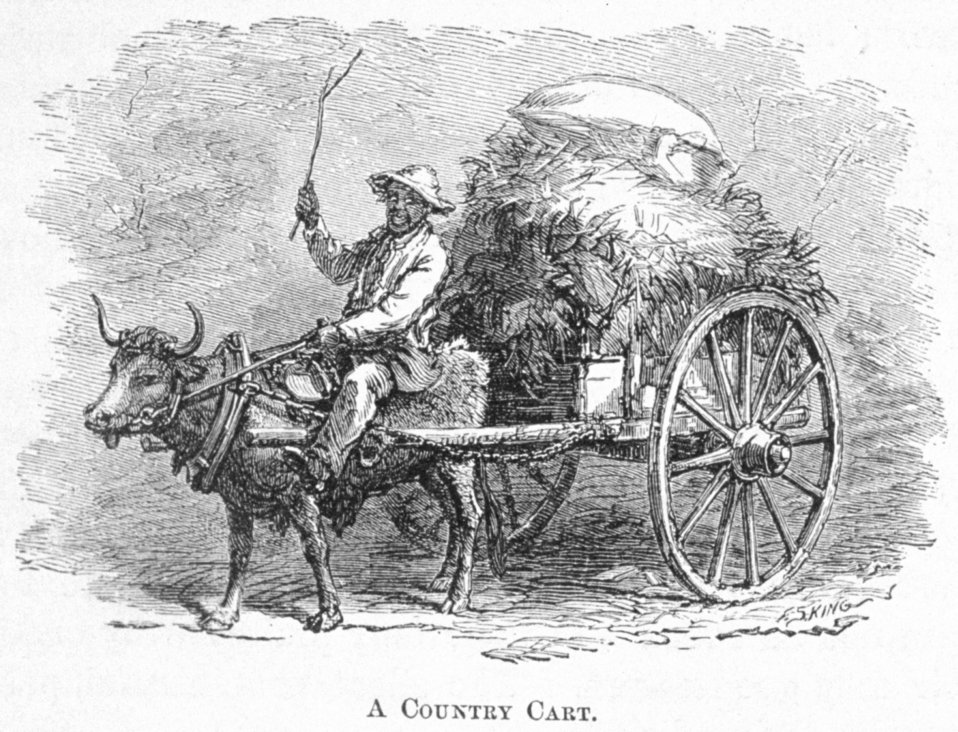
A Country Cart - in 'Florida for Tourists, Invalids, and Settlers' by George M. Barbour, 1881. Library Call No. F316 .B23 1881.